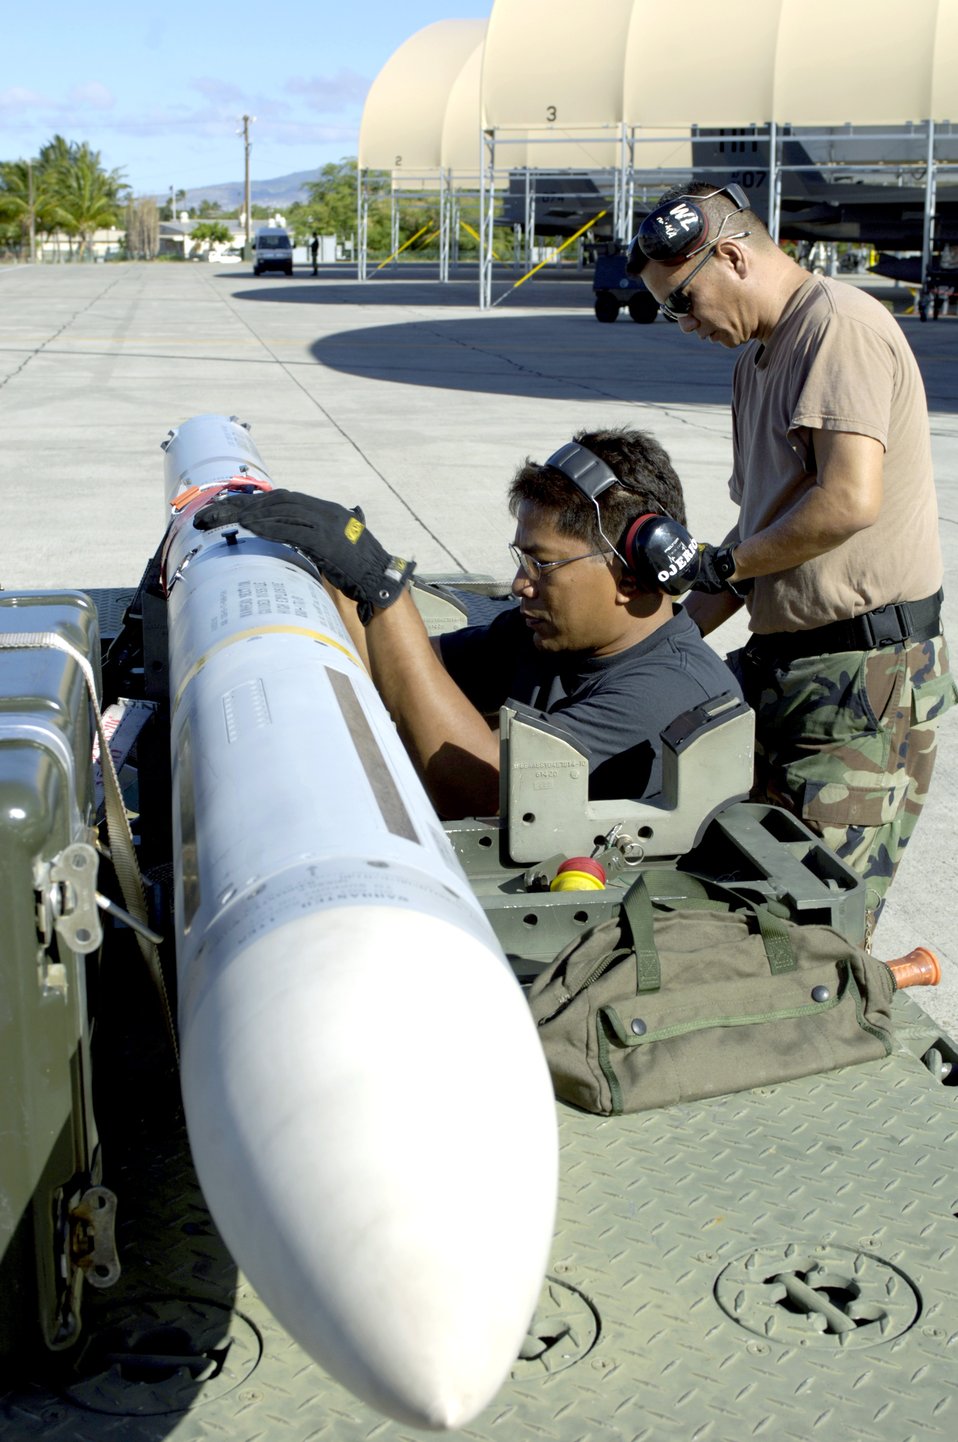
Total force at work in RIMPAC

Master Sgt. Baldwin Ojerio and Staff Sgt. Arthur Hamabata inspect an AIM-7 Sparrow missile before loading it on an F-15 Eagle at Hickam Air Force Base, Hawaii, on July 16 during the Rim of the Pacific Exercise 2006. The Airmen are from the Hawaii Air National Guard's 154th Aircraft Maintenance Squadron.